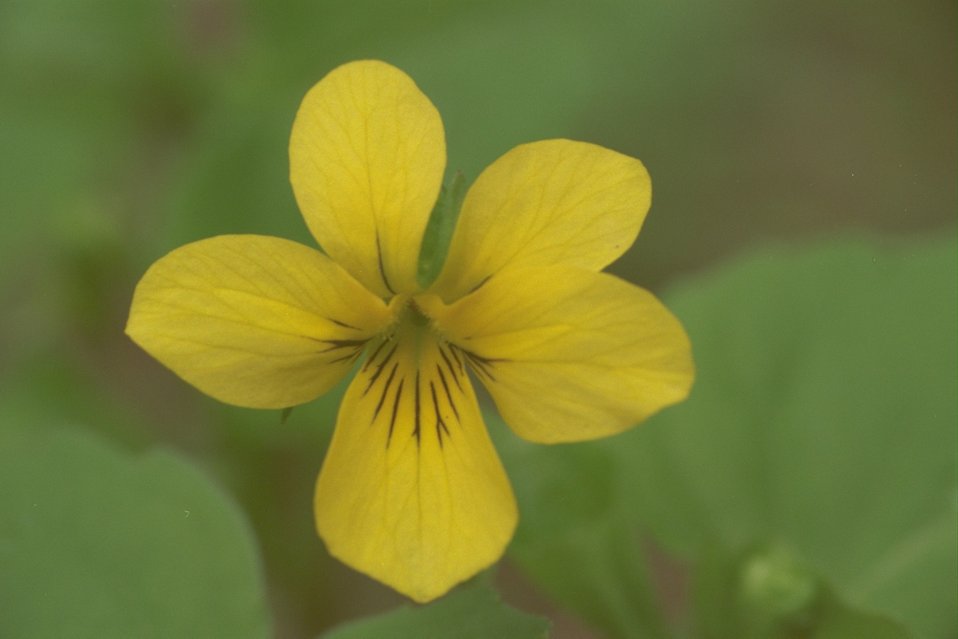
Stream Violet (Viola glabella) along Wards Creek.